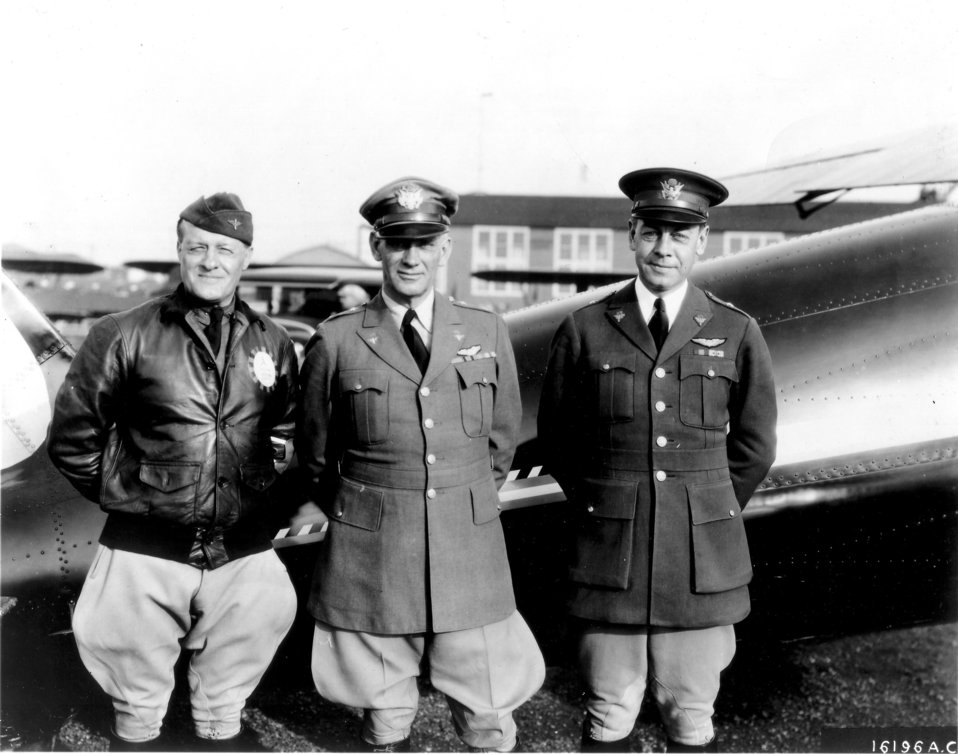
Air Service Corps

EARLY YEARS -- Brig. Gen. Benjamin D. Foulois, Maj. Gen. James. E. Fechet and Brig. Gen. H.C. Pratt